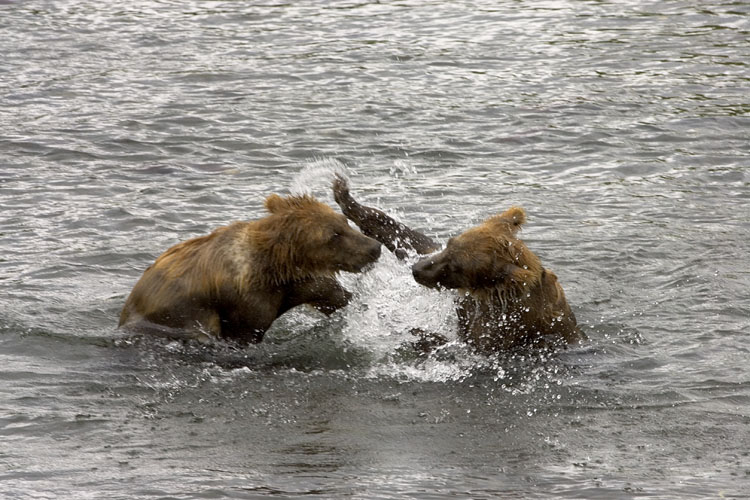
KOD Hildebrand (24)

Kodiak National Wildlife Refuge- Wildlife